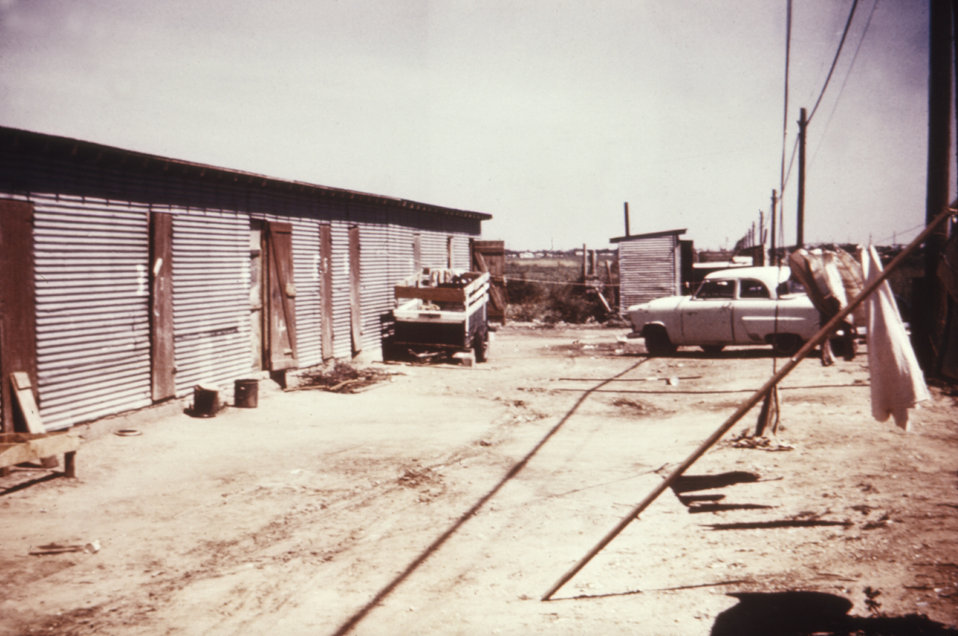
This was part of a series used to familiarize public health inspectors with sanitation conditions in migrant worker camps.